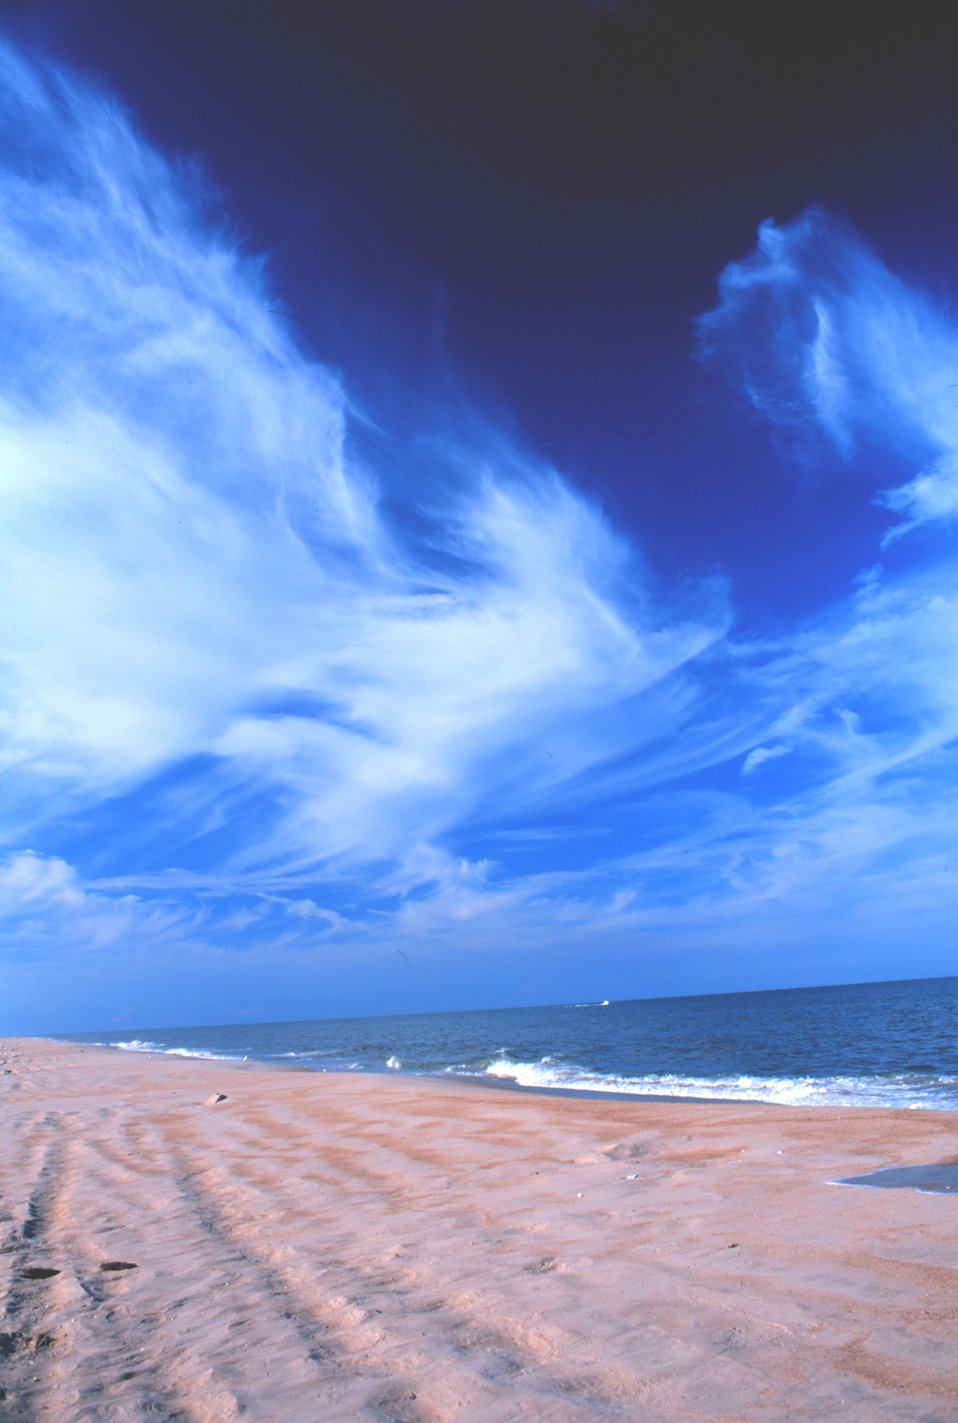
Looking north at Delaware Seashore State Park